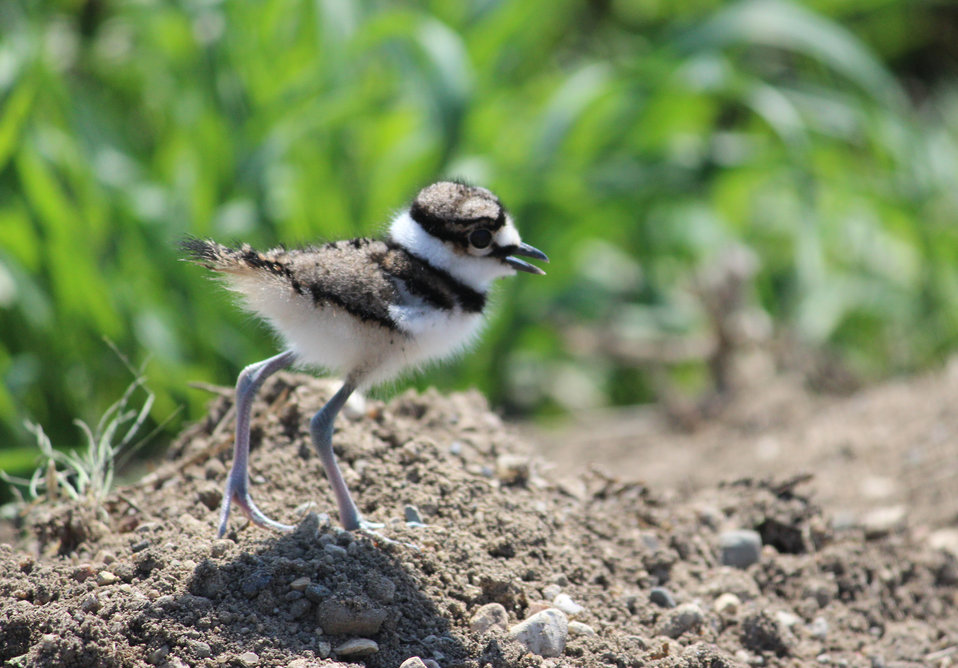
Killdeer Chick

Young killdeer (Charadrius vociferus) are precocial--which means they can run and feed themselves from birth. They are also feathered when they hatch, unlike many birds that hatch in nests in trees. Killdeer nest on the ground in a shallow dirt or rock bowl without much cover. Adults feign a 'broken wing' to distract and lead potential predators away from the nest. This is just one of the four chicks seen on a road while doing Four-Square Mile Waterfowl Counts this spring.